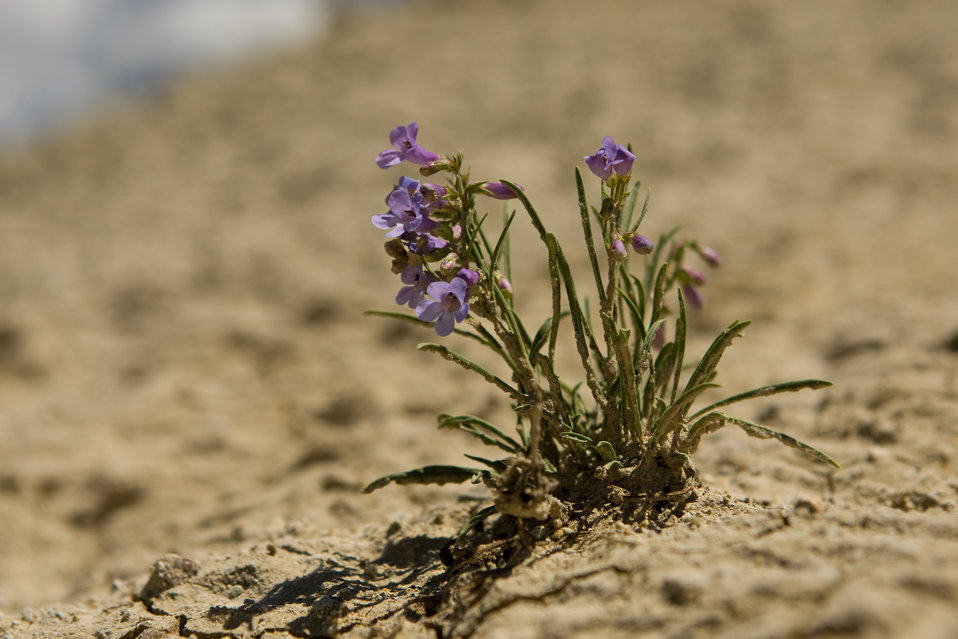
Colorado Rare Plant Conservation Initiative

The Colorado Rare Plant Conservation Initiative (RPCI) is a partnership of 23 statewide and regional agencies, private organizations, and academic institutions working to conserve 121 rare plants in Colorado. As part of these efforts the group developed the Colorado Rare Plant Conservation Strategy, developed Best Management Practices to reduce energy development impacts, addressed climate change, and developed focused strategies for the conservation of individual species at eight priority landscapes. The group has also worked to coordinate volunteer efforts for plant conservation across the state.